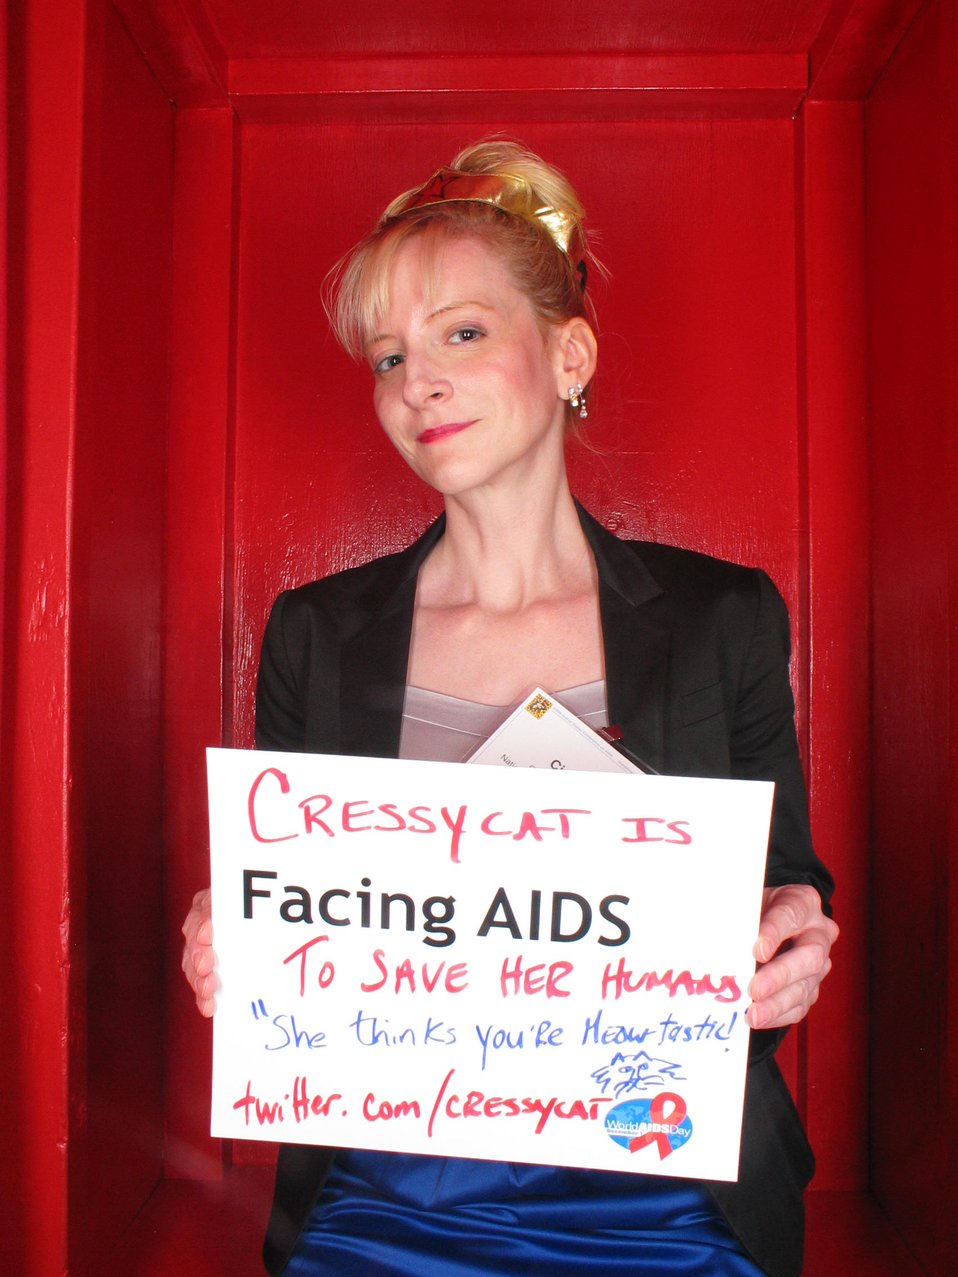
Cressey Cat is Facing AIDS to save her humans. She thinks you're meowtastic.